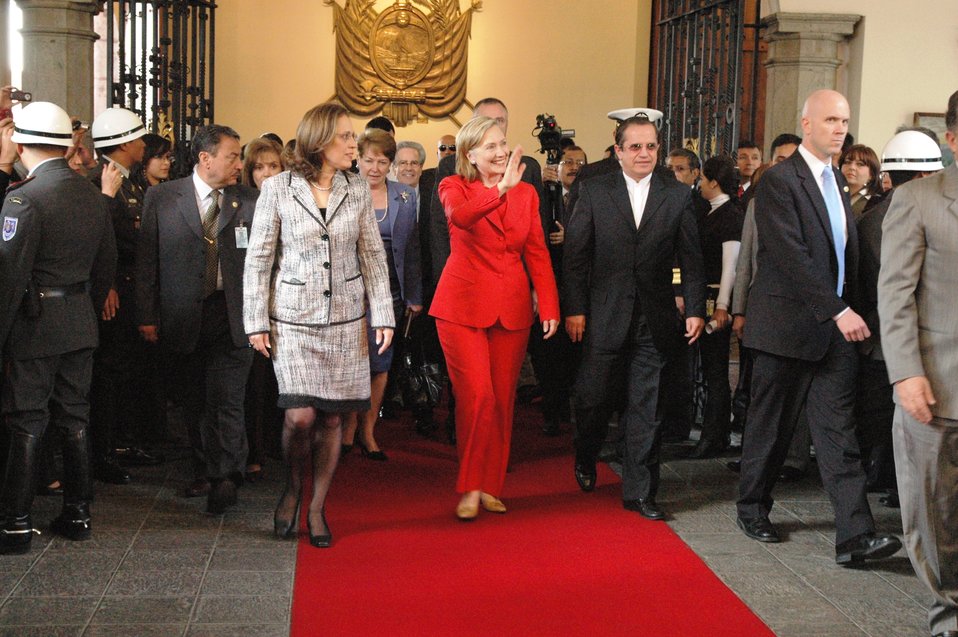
Secretary Clinton and Ecuadorian President Correa Walk to Bilateral Meeting

U.S. Secretary of State Hillary Rodham Clinton walks to a bilateral meeting where she will meet with Ecuador's President Rafael Correa in the Carondelet Palace in Quito, Ecuador, on June 8, 2010.